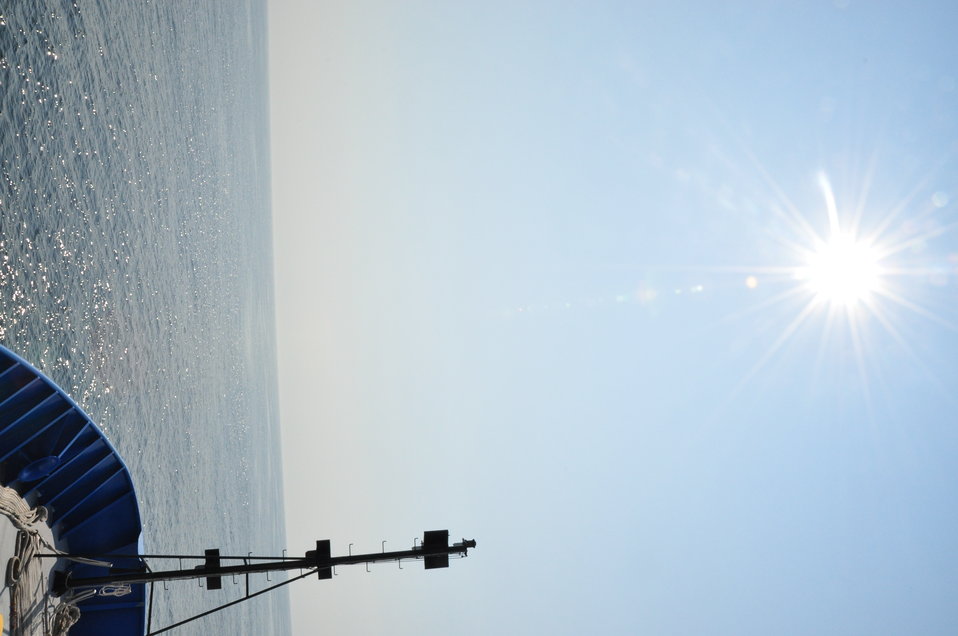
August 2009, the open seas!

A couple hours out and back to Jeffreys Ledge. We hoped to have offshore water quality information to compare with what we collected closer to shore. The weather couldn't have been nicer, made for a smooth ride and hours of gazing at the horizon looking for spouts!